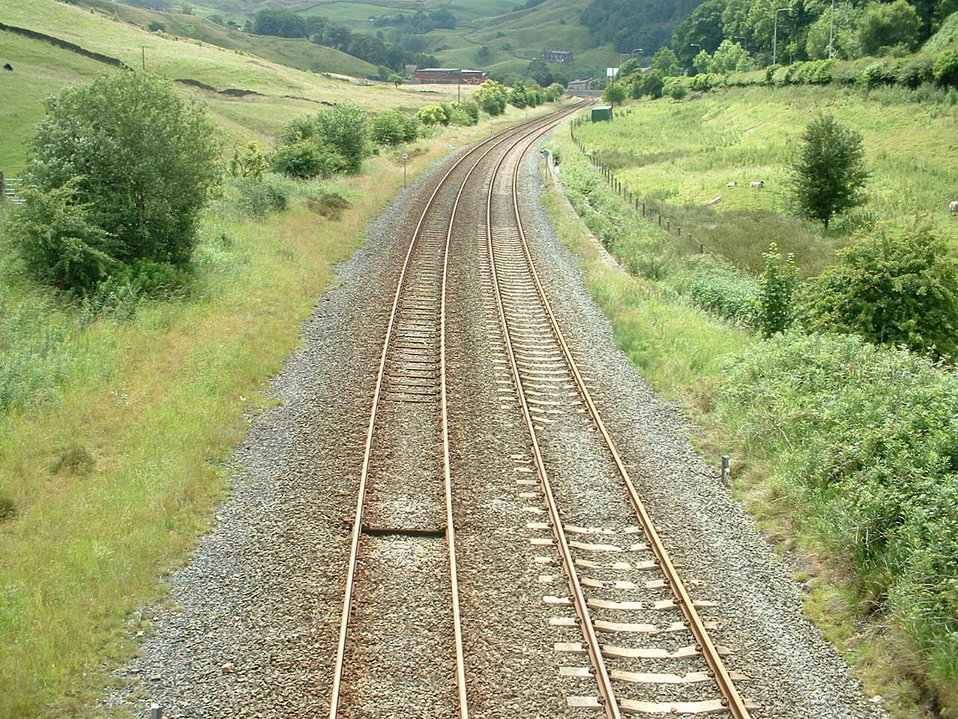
Railway of the Caldervale Line, UK.